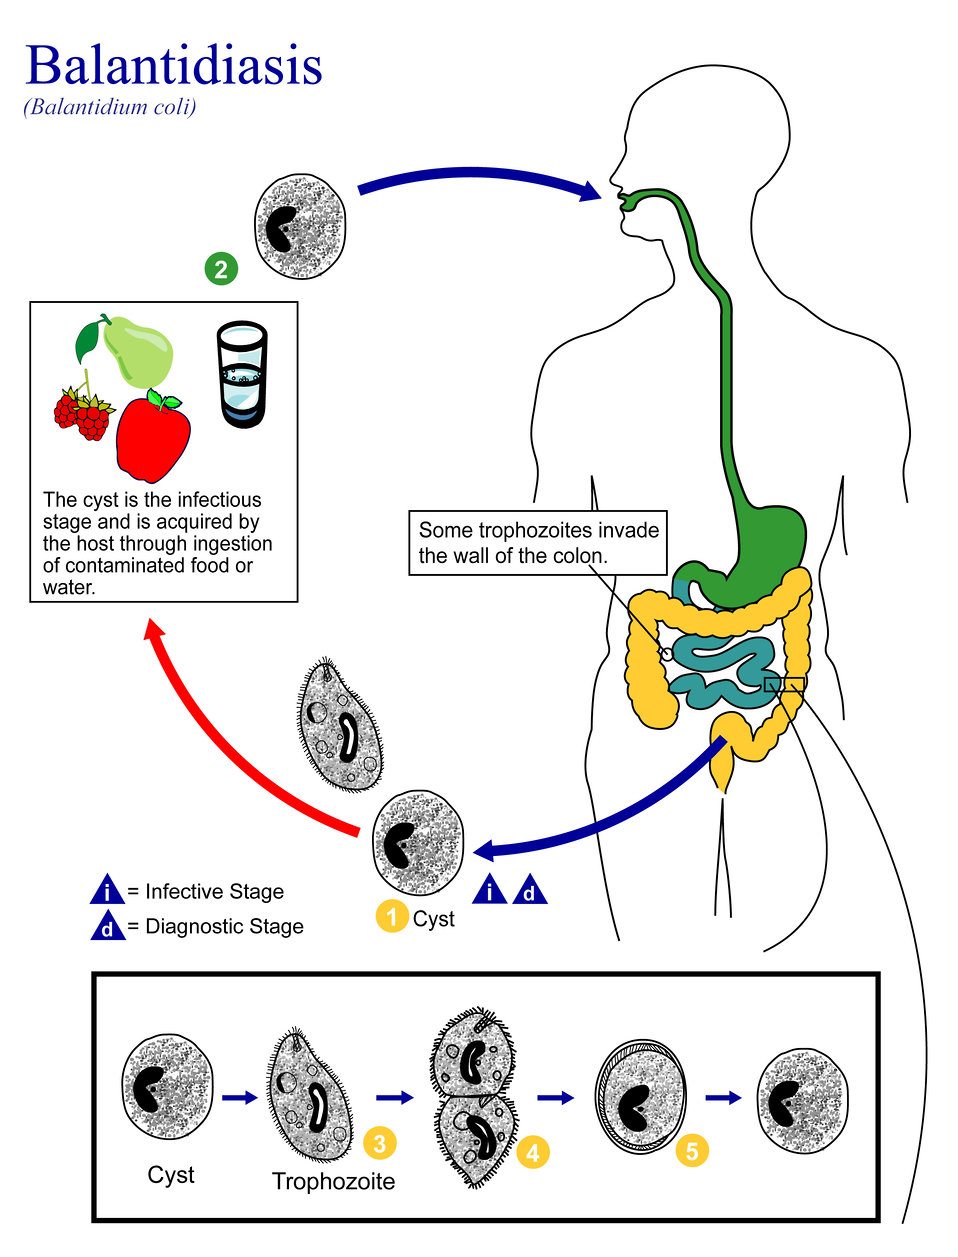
This illustration depicts the life cycle of Balantidium coli, the causal agent of Balantidiasis.